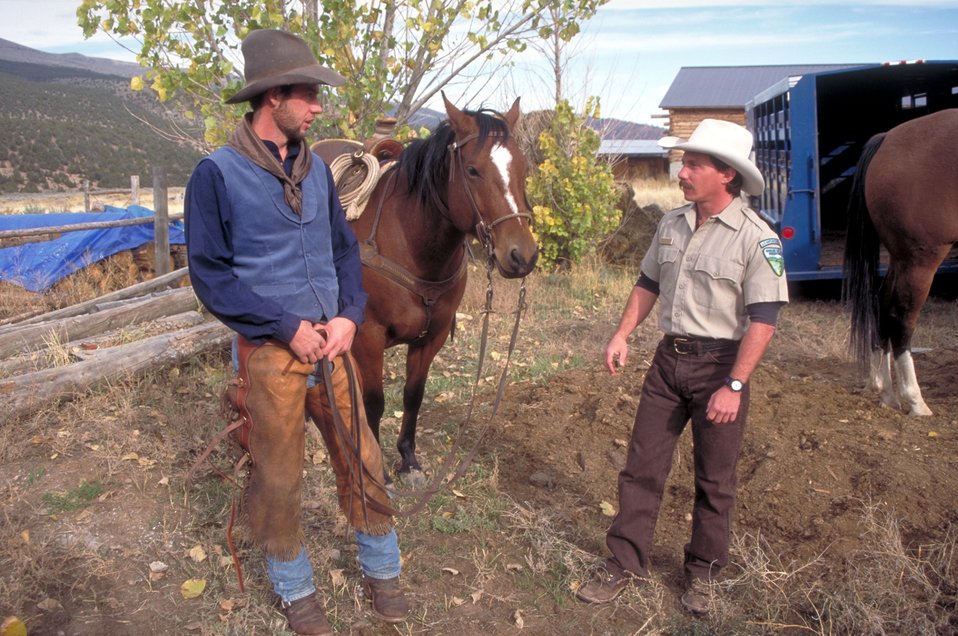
Working cowboys living near Vernal, Utah.